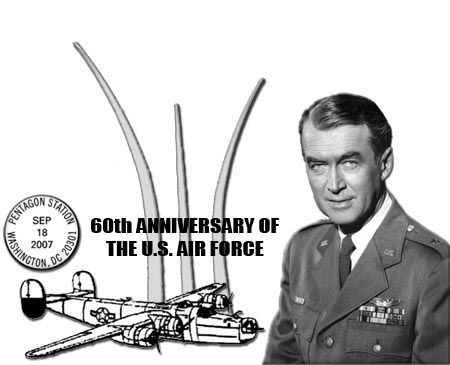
Airmen commemorate 60th anniversary through the mail

The U.S. Postal Service will commemorate the Air Force's 60th Anniversary with a special postmark Sept. 18 to Oct. 18. The post office also offers a special edition postage stamp honoring Brig. Gen. James